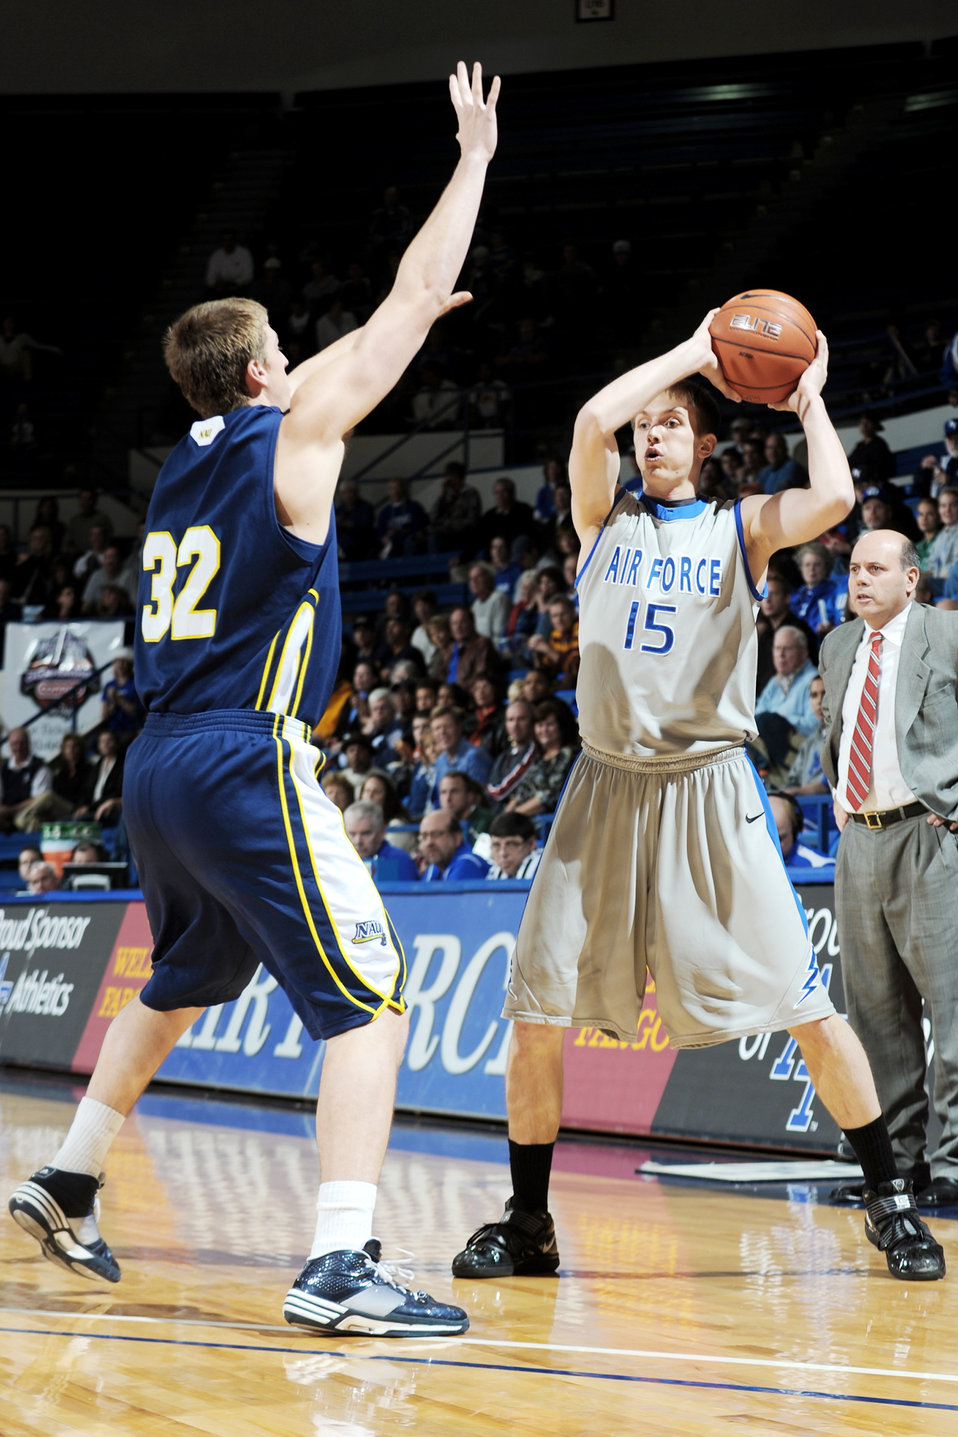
Falcons vs Northern Arizona

Air Force Academy sophomore Taylor Steward looks to pass the ball as Northern Arizona's senior forward Nick Larson for tries to block at the Academy's Clune Arena Dec. 19, 2009. The Falcons lost the game 60-52.